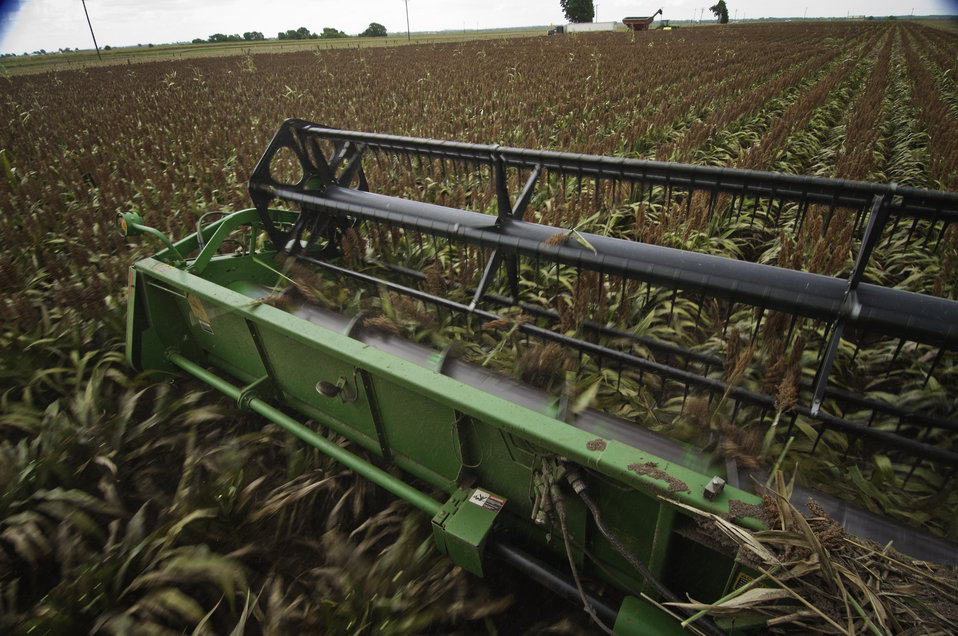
Grain sorghum is harvested on the Wilder Farms in Navasota, TX on Aug. 23, 2013.